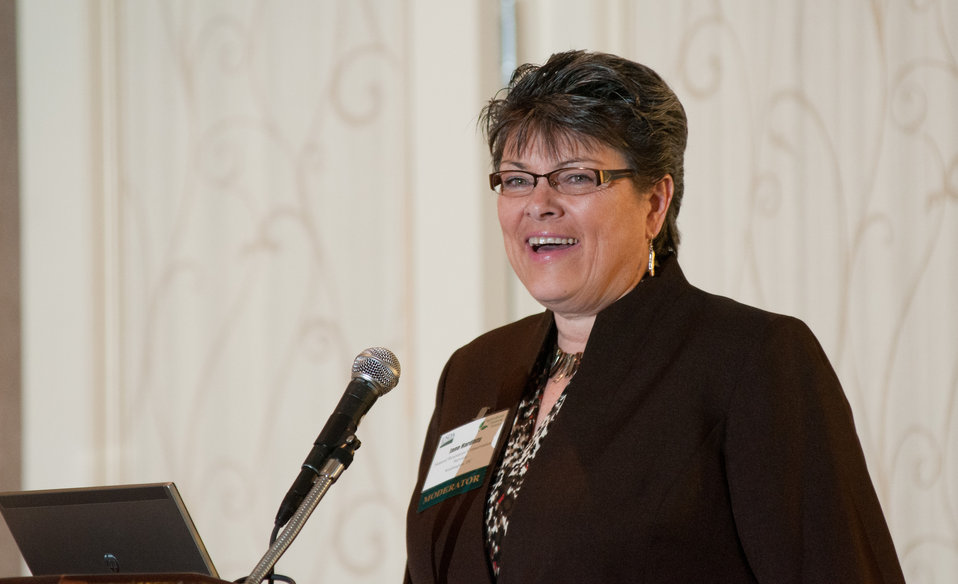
The U.S. Department of Agriculture (USDA), Natural Resources Conservation Service (NRCS), Indiana State Conservationist Jane Hardesty moderates the breakout session on Reducing Risks by Improving Soil Health, at the 2013 Agricultural Outlook Forum held at the Crystal Gateway Marriott Hotel in Arlington, VA on Friday, Feb. 22, 2013. The speakers examined the indicators of soil health, to reduce chemical inputs and apply the right techniques for sustainable production and other benefits. Soil health is defined as the capacity of the soil to function as a living ecosystem that sustains plant, animal, and human health with limited human intervention.